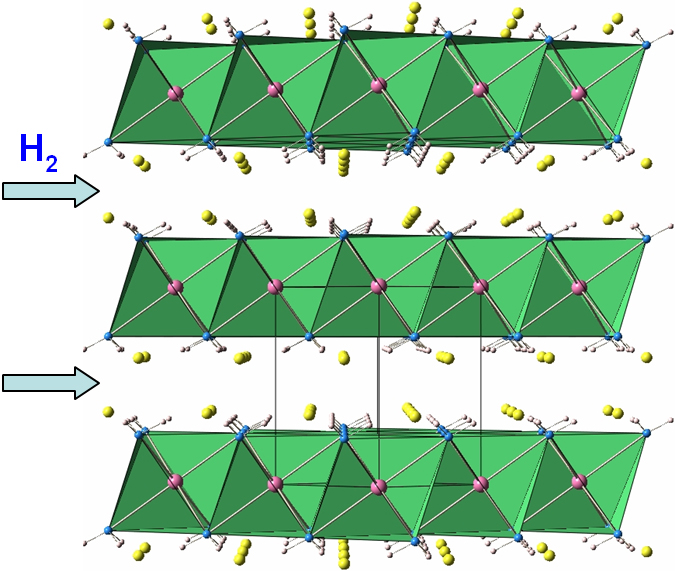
Improved Ion Mobility is Key to New Hydrogen Storage Compound

The atomic structure of the mix of lithium amide with lightweight metal hydrides shows layers of calcium that the lithium ions can sprint through. This facilitates hydrogen storage and release.